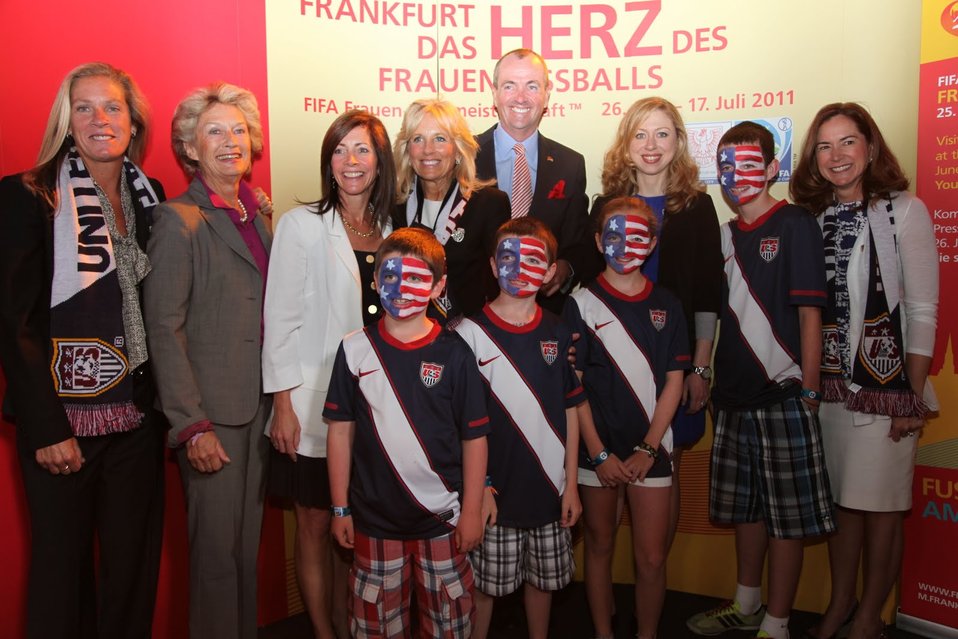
Ambassador Murphy Poses With His Family, Second Lady Biden, Chelsea Clinton, and Lord Mayor of Frankfurt Roth

Second Lady of the United States Jill Biden; daughter of Secretary of State Hillary Rodham Clinton and former President Bill Clinton, Chelsea Clinton; and U.S. Ambassador to Germany Philip D. Murphy and his family pose for a photo with the Lord Mayor of Frankfurt Petra Roth at the fan zone near the river Main during the 2011 FIFA Women’s World Cup final in Frankfurt, Germany, on July 17, 2011.